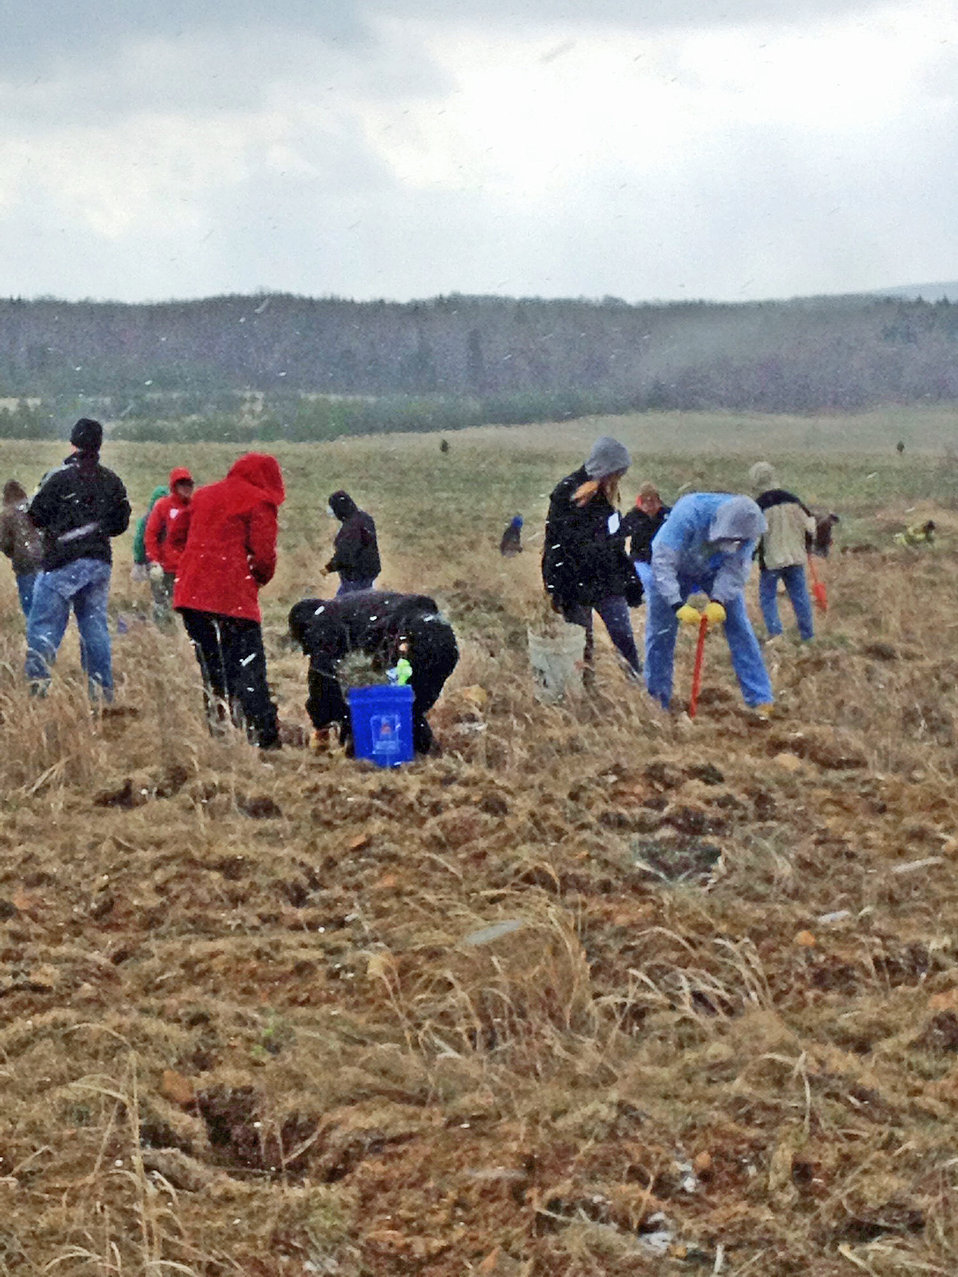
Shanksville Mug2-a

Volunteers plant American elms at the Flight 93 National Memorial in Shanksville, PA on Apr. 20, 2013.